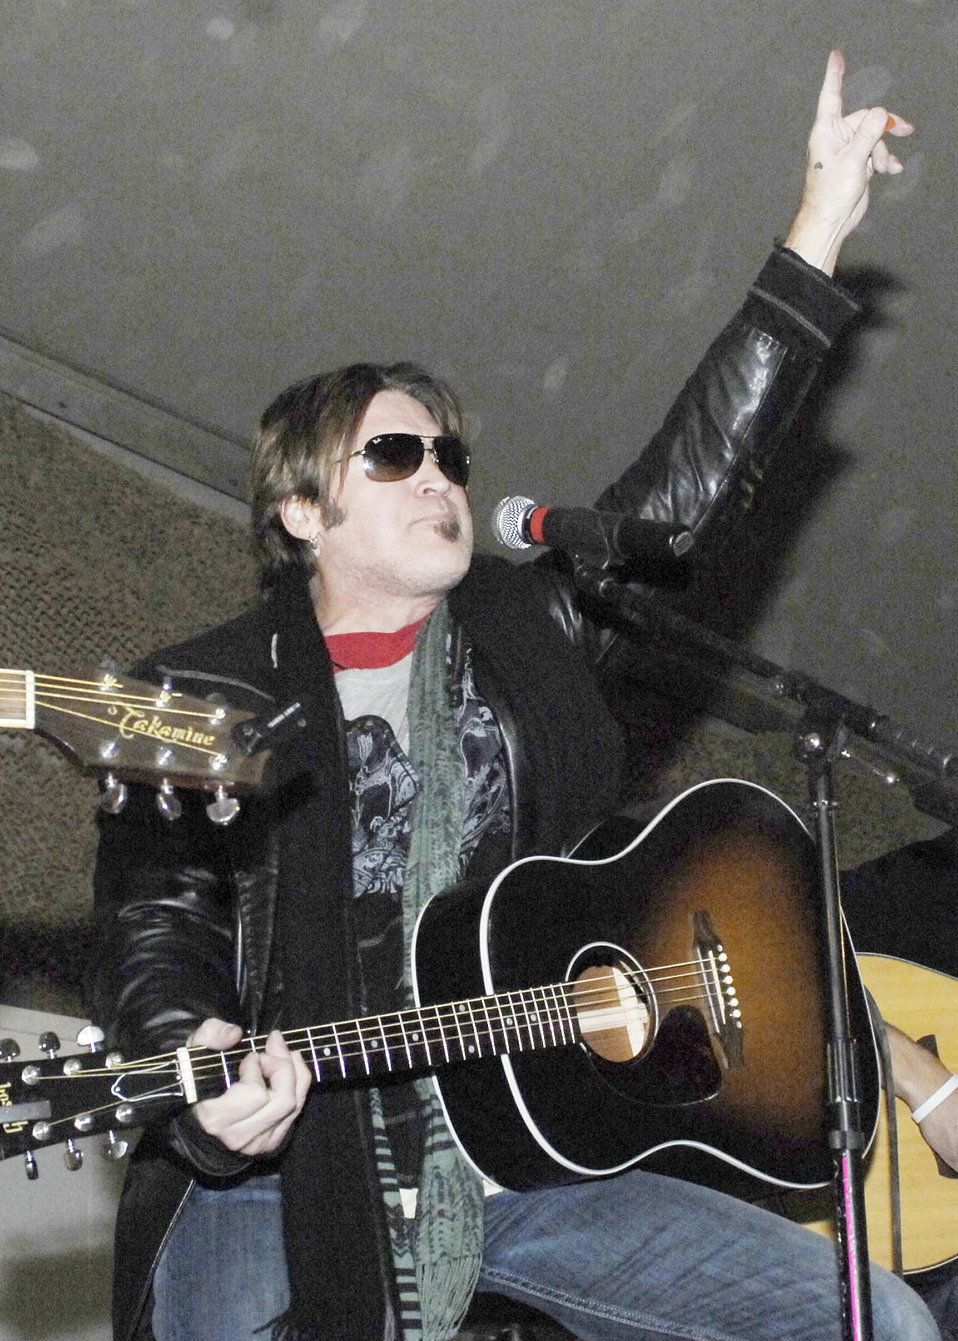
USO brings celebrities to Servicemen and women

Billy Ray Cyrus entertains the Airmen, Soldiers, Sailors and Marines at Bagram Airfield during a United Service Organization tour Dec. 15, 2009. Mr. Cyrus, Dave Attell, Anna Kournikova, and Nick Bollettieri attended the USO tour to boost the morale of the servicemen and women. Mr. Cyrus is a singer/actor and hails from Flatwoods, Ky.